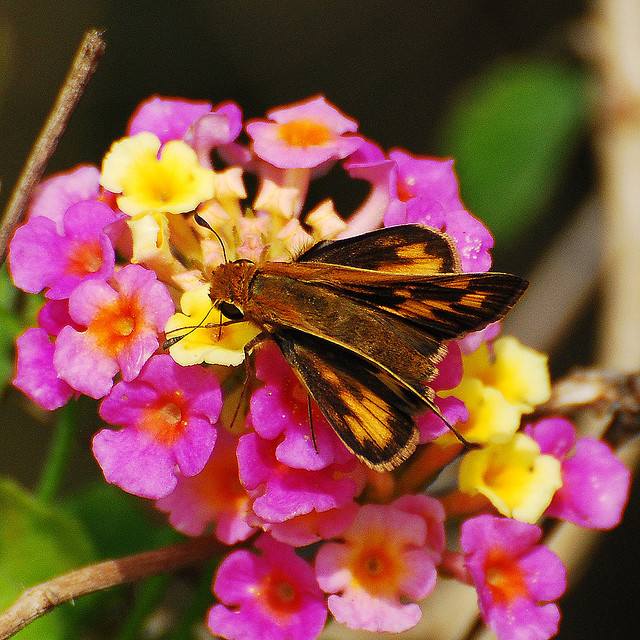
fiery skipper butterfly on lantana

Laguna Atascosa National Wildlife Refuge, TX